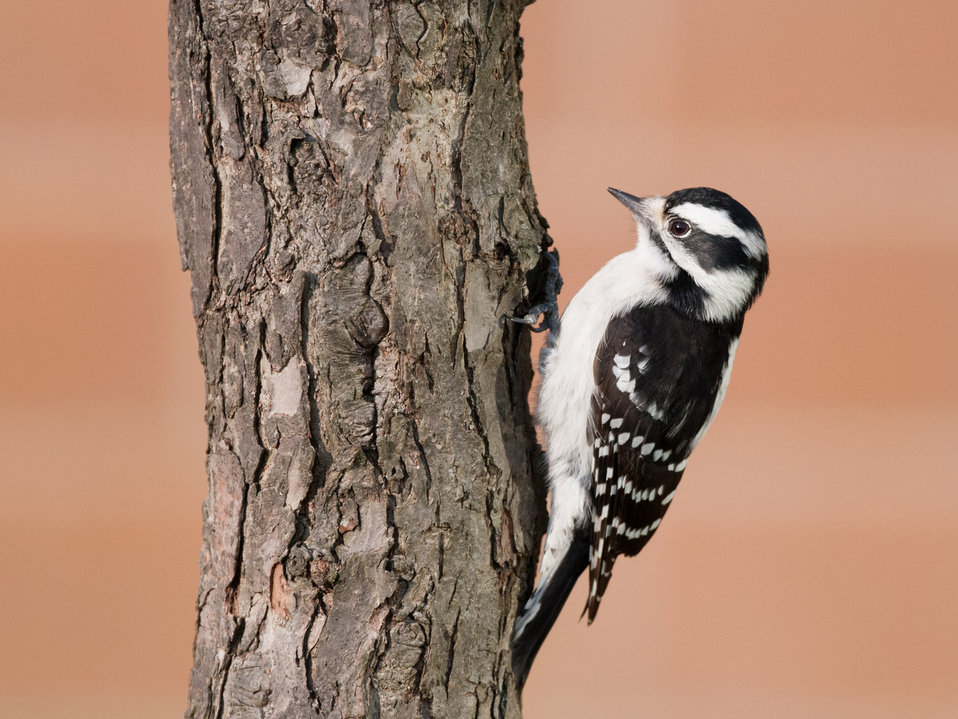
Downy Woodpecker

Photographed outside the Regional Office in Hadley, MA.